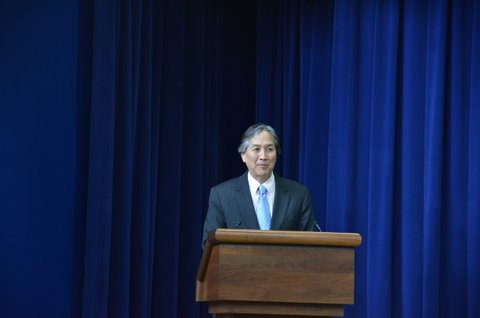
Dr. Howard Koh

WH 2012 World Hepatitis Day Event